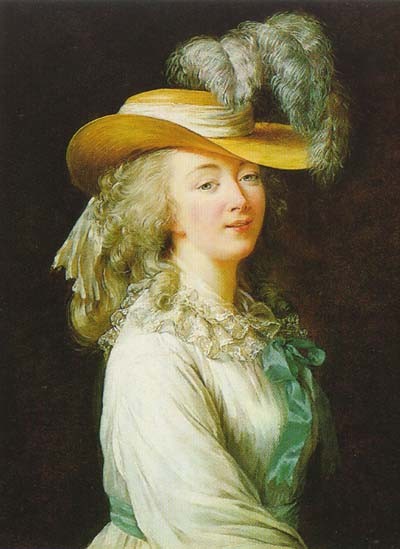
Madame Dubarry1